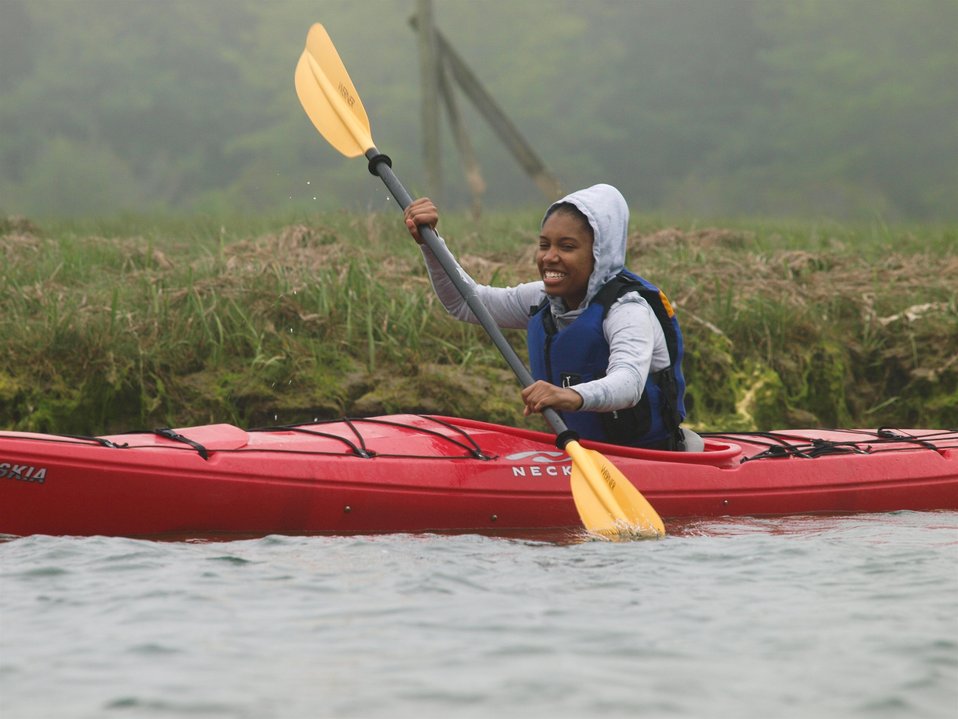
Kayak Trip